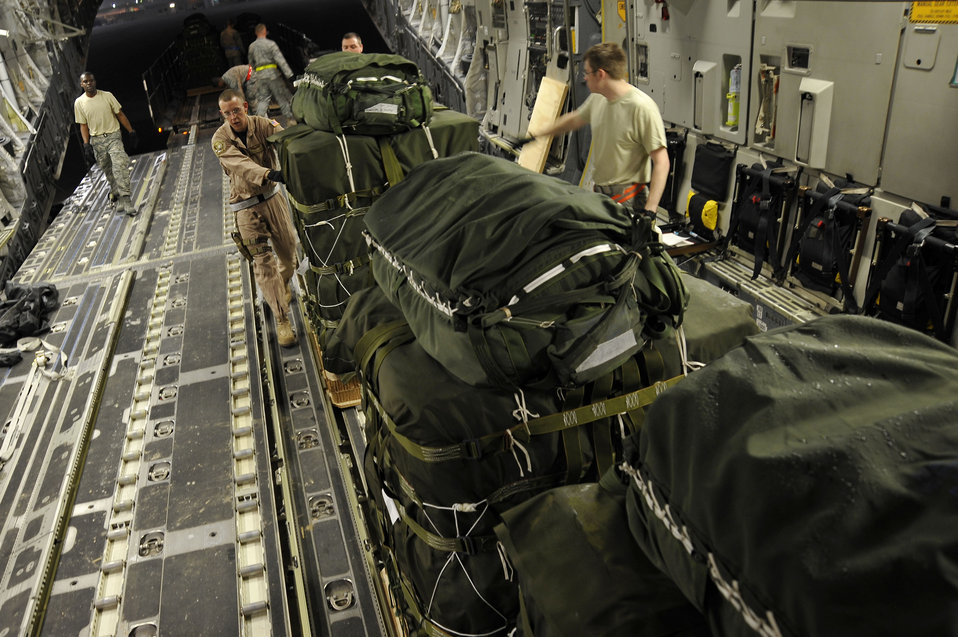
Airmen, Soldiers airdrop supplies to Afghanistan

Senior Airman Steven Holman, 816th Expeditionary Airlift Squadron loadmaster, pushes a container delivery system bundle onto a C-17 Globemaster III Jan. 9, 2010, in Southwest Asia. The CDS bundles will be dropped to U.S. forces in Afghanistan.